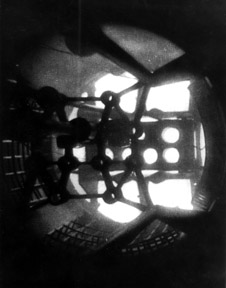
A 'self portrait of a reactor' -- made by the light of the blue glow known as Carenkov radiation, produced by operation of the Low Intensity Test Reactor. c. 1954